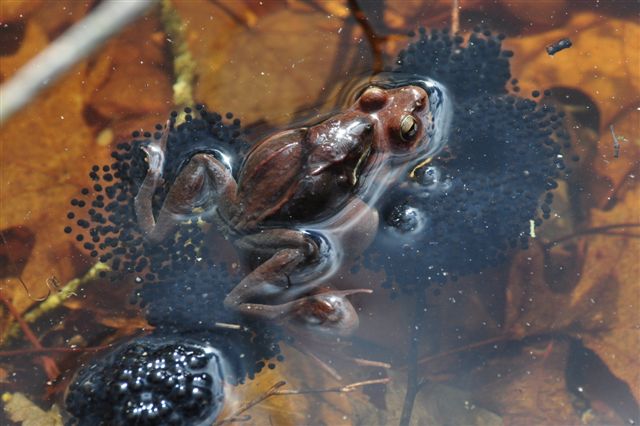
Photo of the Week - Frog with eggs at Ninigret National Wildlife Refuge, RI

Photo of the Week - 3/15/11

Frog with eggs in the Kettle Pond vernal pool at Ninigret National Wildlife Refuge, Rhode Island.